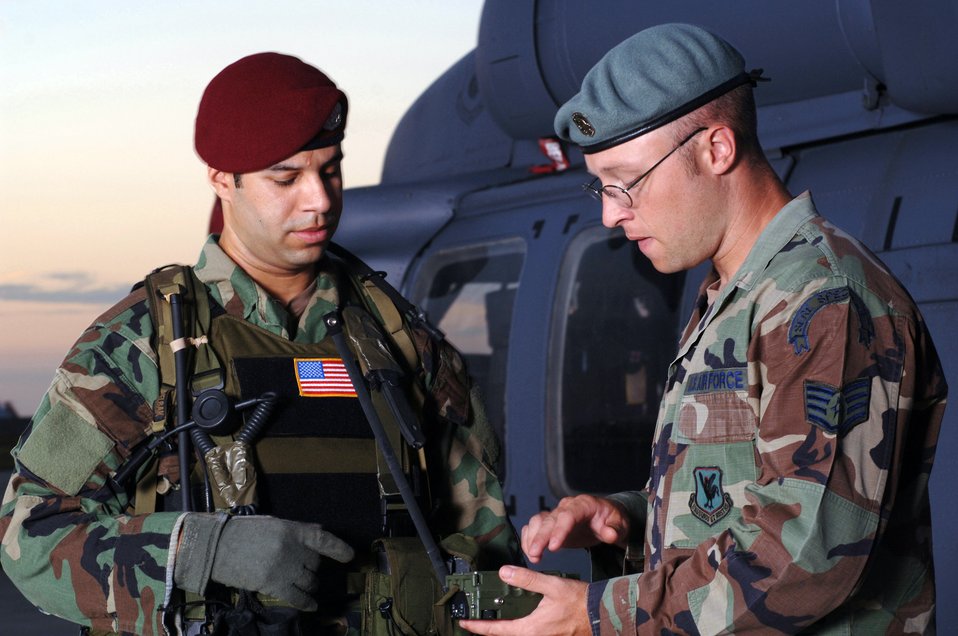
Train now, save later

KADENA AIR BASE, Japan -- Staff. Sgt. Charles Bouck (right) explains the features of a survival radio to Staff Sgt. J. Pierre Griffin during training here. The 31st Rescue Squadron trains, equips and employs combat-ready pararescuemen worldwide. They also use any means available to provide combat and humanitarian search and rescue and medical assistance in all environments. Sergeant Bouck is a search, evasion, resistance and escape instructor, and Sergeant Pierre is a pararescueman. Both are assigned to the 31st RQS here.